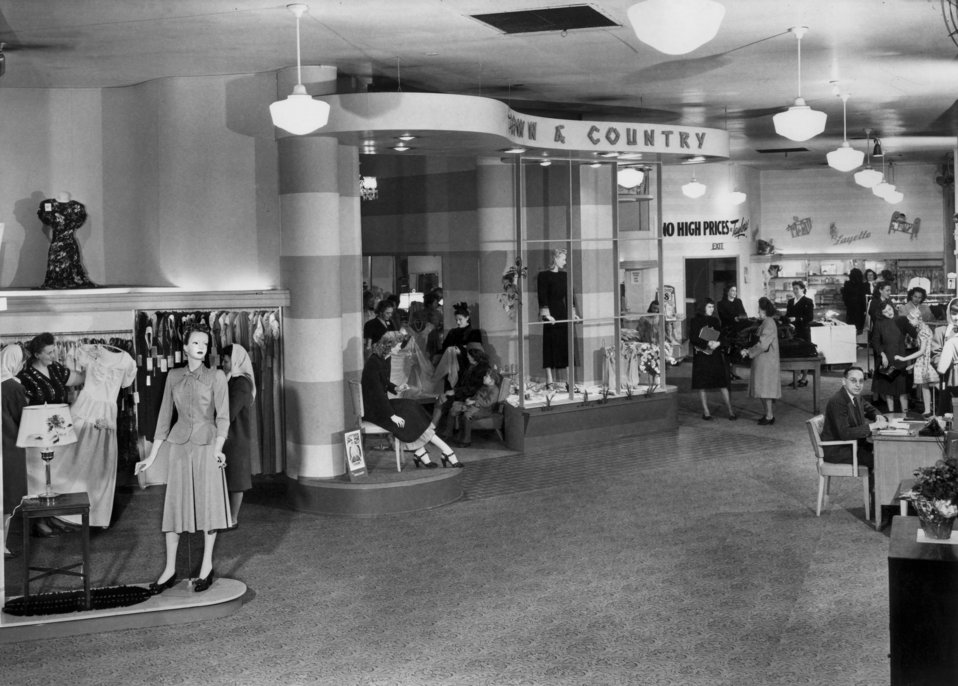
Inside Oak Ridge shopping Center

57-4344-1 DOE photo Ed Westcott

Inside Oak Ridge shopping Center Oak Ridge Tennessee 1957